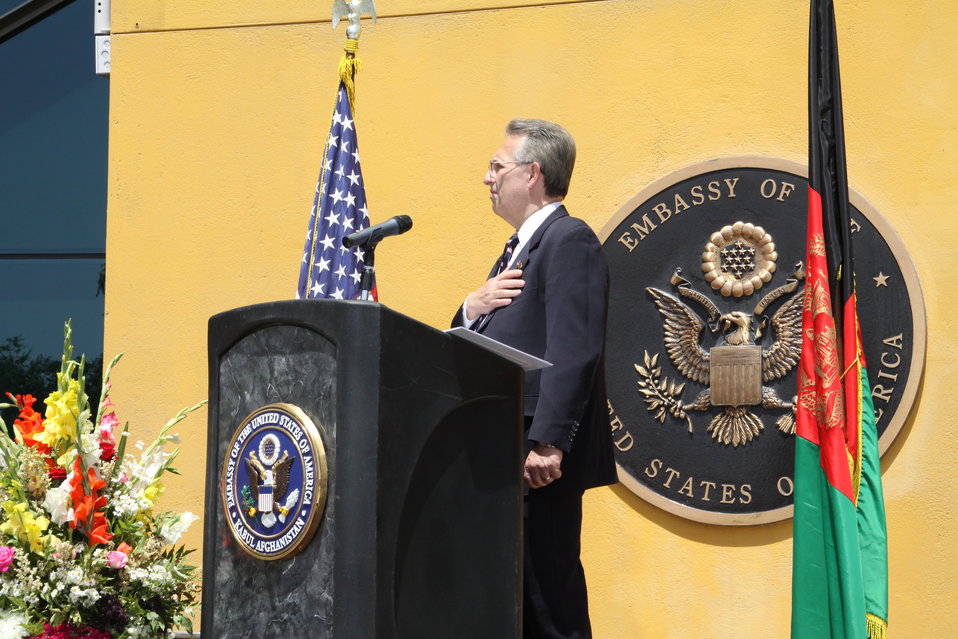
Kabul Official July 4th Celebration